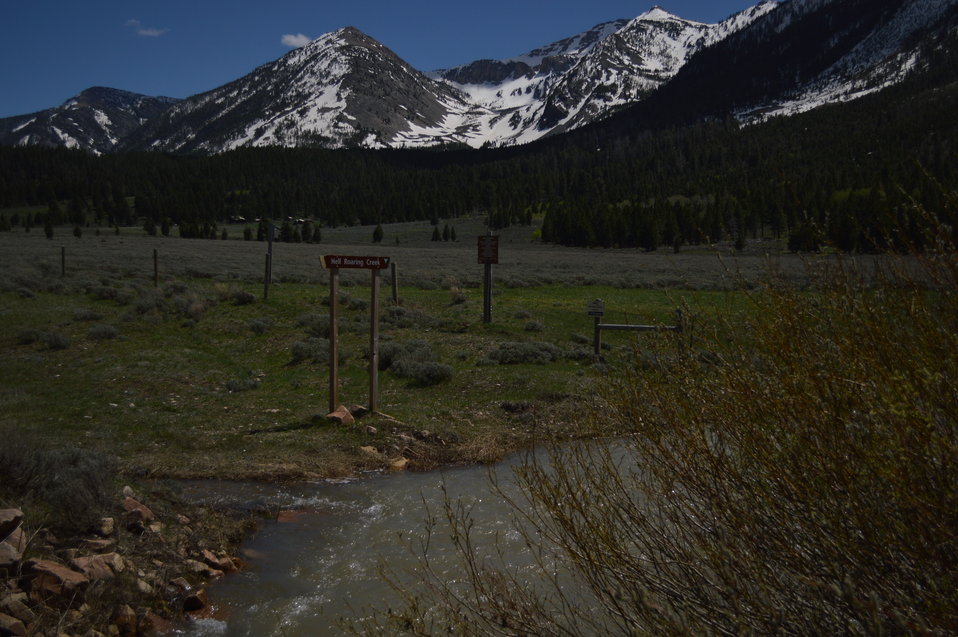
Regional Leadership Visit to Montana 2014